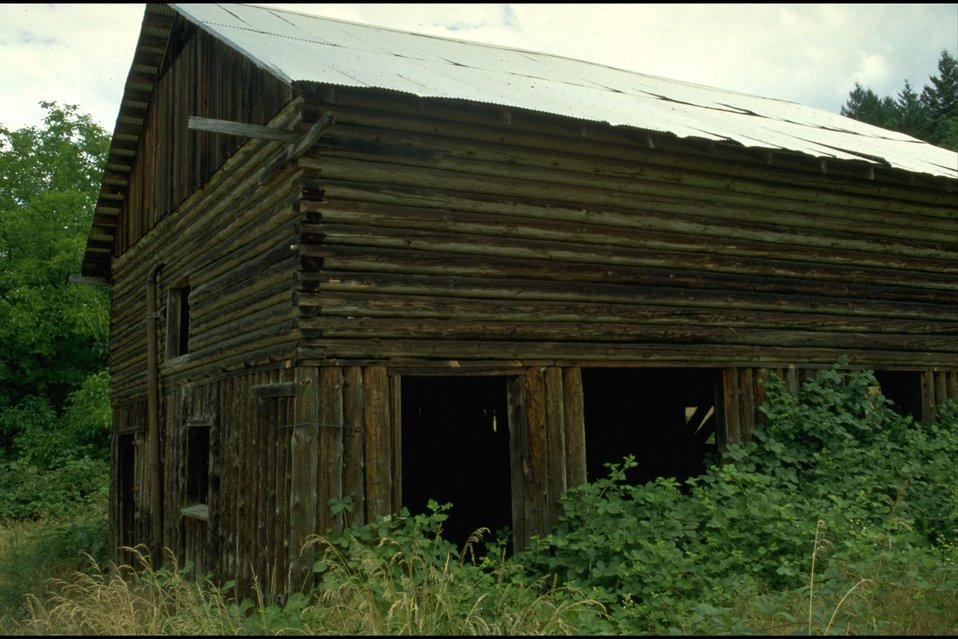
Rogue River - Robertson Bridge. Robertson Bridge Barn.